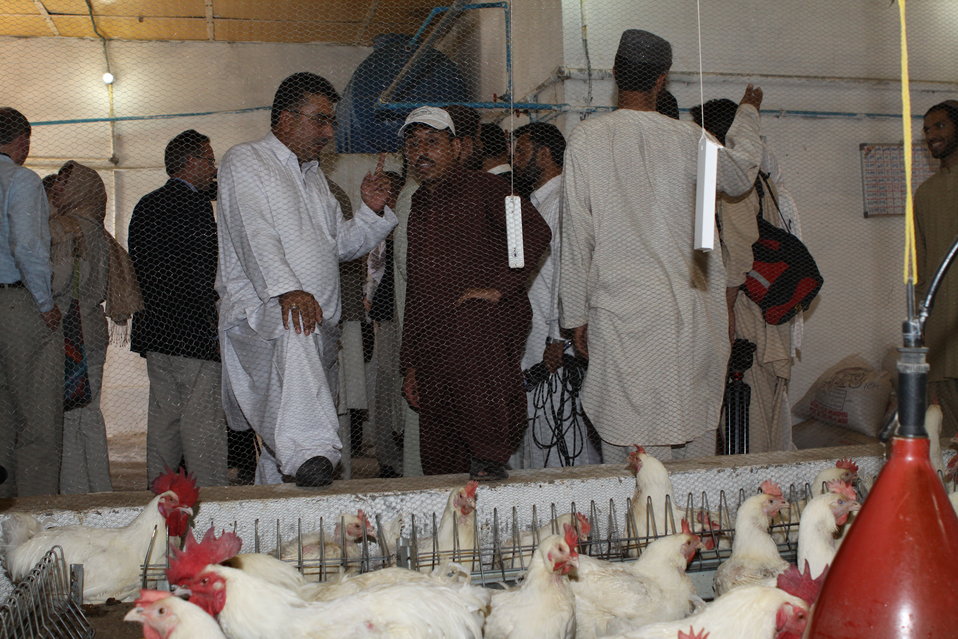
Bolan Poultry Farm